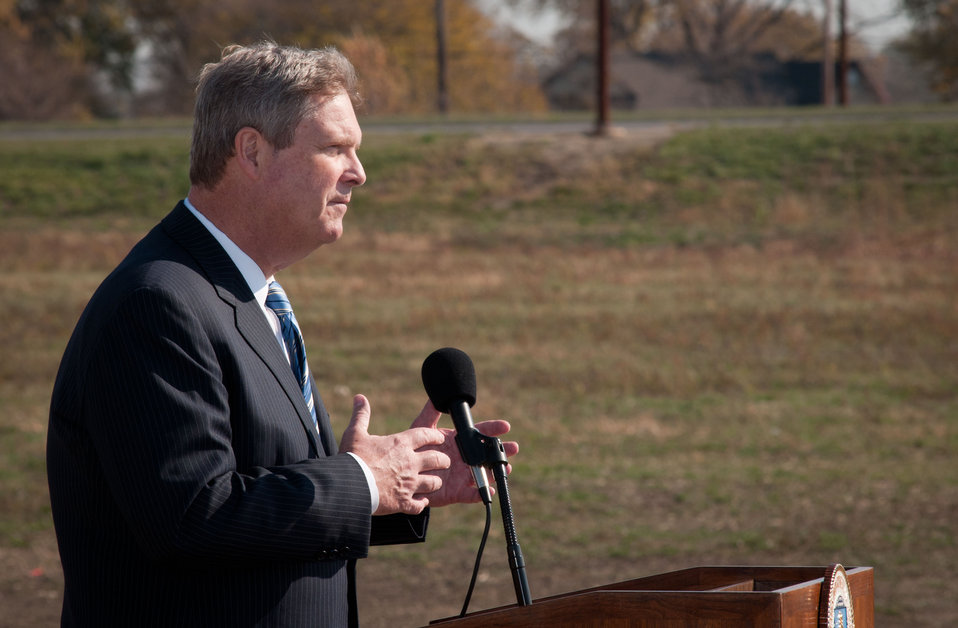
U.S. Department of Agriculture Secretary Tom Vilsack, visited a recently completed transportation project that extended the existing MacArthur Boulevard and new interchange with Interstate 72, that brought new businesses and 500 new jobs to Springfield, IL on November 2, 2011. Agriculture Secretary Tom Vilsack spoke in front of a harvested farm field at the interchange The Administration's strategy to strengthen the U.S. economy and to highlight what passage of the American Jobs Act will mean for Illinois. 'The American Jobs Act provides common-sense steps we can take right now to put more people back to work and put more money in the pockets of working Americans, without adding a dime to the deficit,' said Secretary Vilsack. 'In Illinois, this Act will provide a tax cut for over 260,000 businesses, support the jobs of 14,500 teachers and first responders and immediately provide a job for over 20,700 construction workers through infrastructure improvements. A typical household in Illinois will receive a tax cut of around $1,640.'